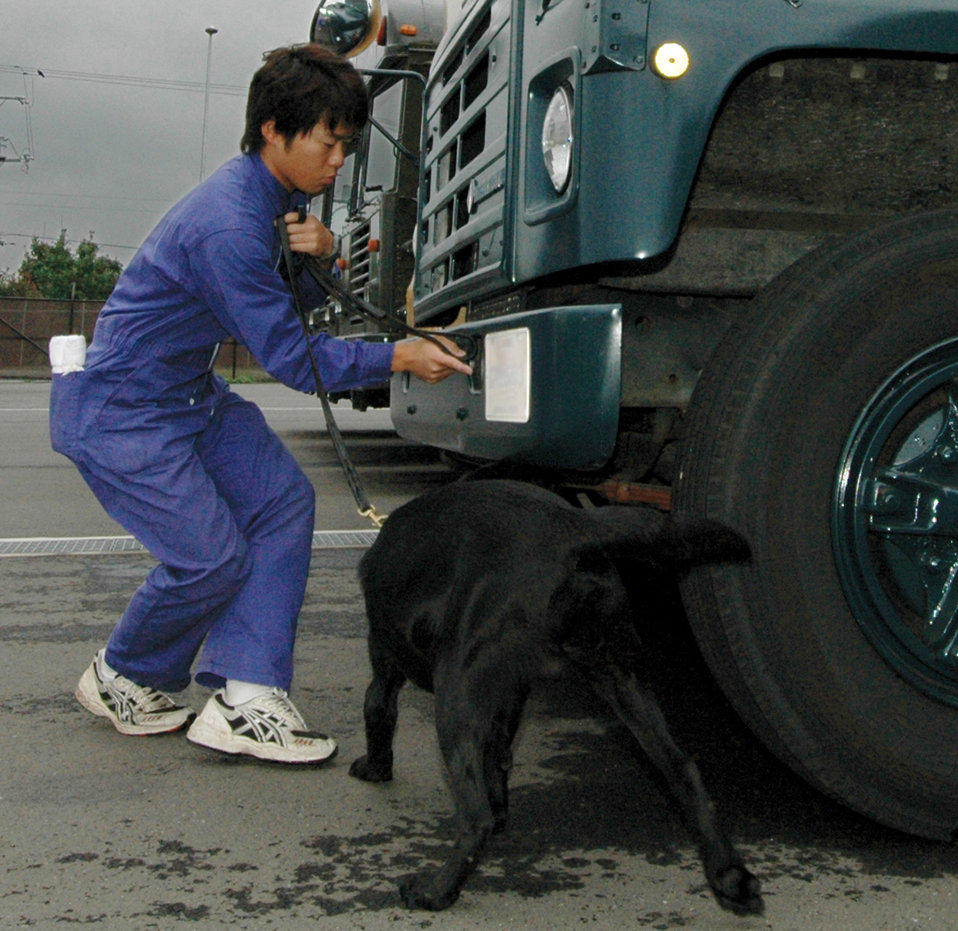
Military working dogs

YOKOTA AIR BASE, Japan -- Japanese customs agent Okawar Tadashi checks the outside of a bus with his dog, Spark, trying to find hidden explosives. Mr. Tadashi and other customs agents are participating in a joint training exercise -- established six years ago to build relations and expertise among the teams -- with Yokota military working dog handlers. Their task is to find hidden explosives on any bus,